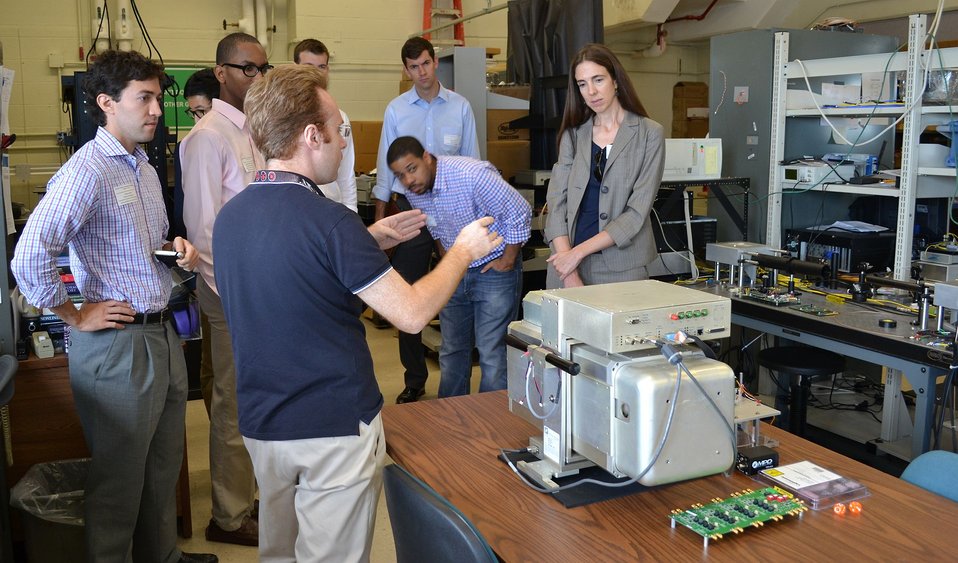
Committee on Commerce, Science, and Transportation Tour #2

Dr. Alessandro Restelli of the NIST Physical Measurement Laboratory (center) briefs Ms. Ann Zulkosky (right) and additional staffers from the Senate Committee on Commerce, Science, and Transportation on measurement challenges addressed at the Quantum Communications Laboratory related to the demonstration of quantum cryptographic key generation at broadband data rates.